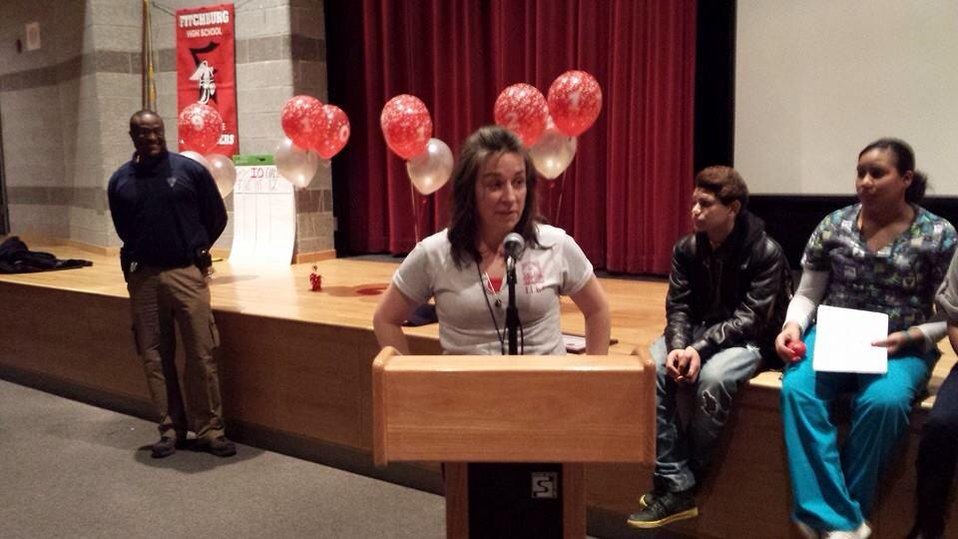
FCAT Get the FACTS on Drugs in MA

Fitchburg Community Action Team (FCAT) held an after school IQ challenge event as part of its participation in National Drug Facts Week. FCAT joins teens across the U.S. in week-long effort to shatter the myths on drugs Fitchburg, MA. — As part of the NDFW celebration, Fitchburg students hosted a presentation, designed by youth, for youth, to increase awareness of drugs and drug abuse.
Students held a special community assembly at Fitchburg High School.